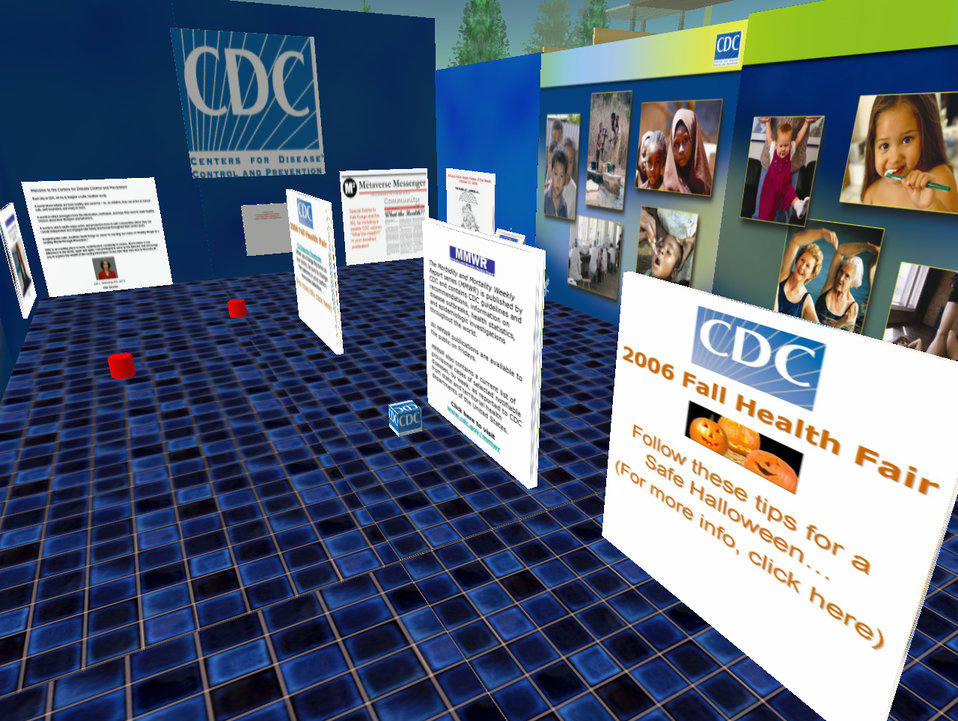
CDC's presence in the online virtual world 'Second Life' launched in August, 2006. Dr. John Anderton designed the initial CDC space using in-world, i.e., Second Life, tools, creating hyperlinks to CDC websites including the MMWR, CDC.gov homepage, CDC podcasts and the Public Health Image Library, PHIL. CDC public health posters from the first 6 decades of the CDC's existence were displayed in the 'Public Health Poster of the Week' billboard feature, which was updated weekly from August, through the end of December, 2006.